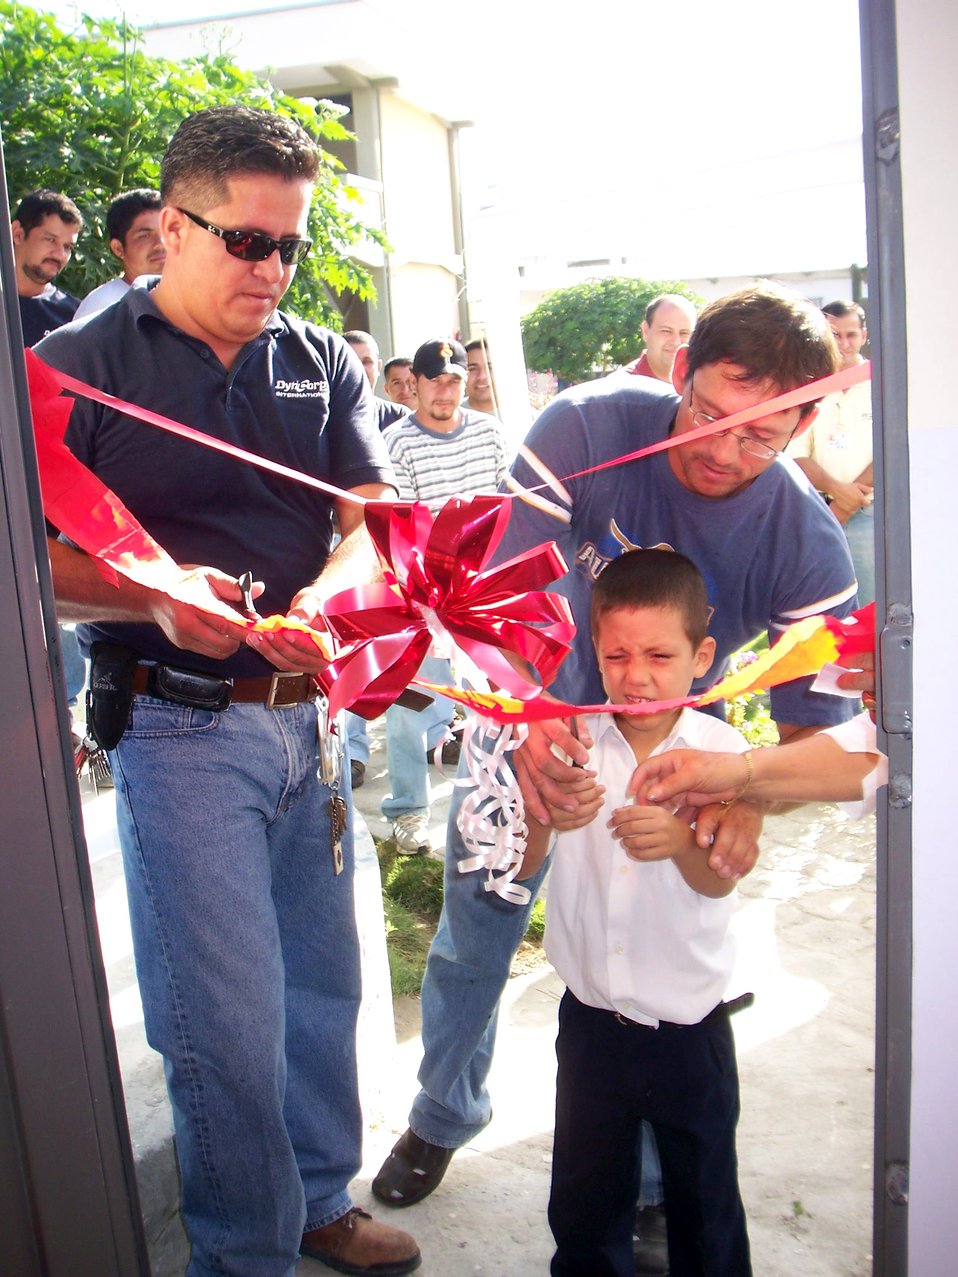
Airmen in Ecuador have a ball serving local community

Volunteers from the 478th Expeditionary Operations Squadron cut the ribbon on a renovated classroom at a school for the handicapped along with one of the visually impaired students in May in Ecuador. Airmen from Manta Forward Operation Location helped renovate the school on their free time while deployed to the Ecuador base.